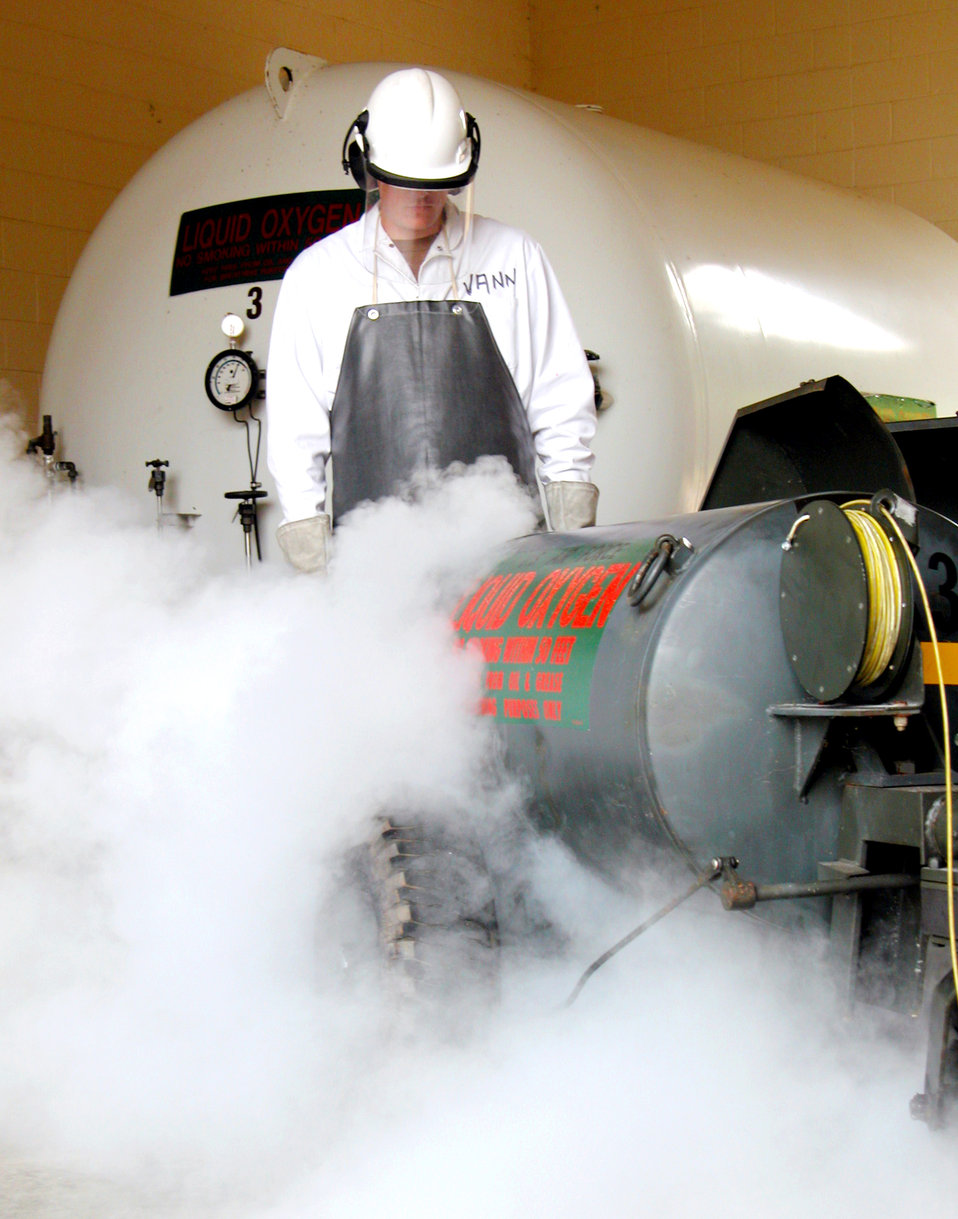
Keeping it cool

ROBINS AIR FORCE BASE, Ga. -- Staff Sgt. David Humphrey transfers liquid oxygen from a storage tank into a 50-gallon LOX cart for delivery to an aircraft. Humphrey is the noncommissioned officer in charge of fuels hydrants with the LOX station here.